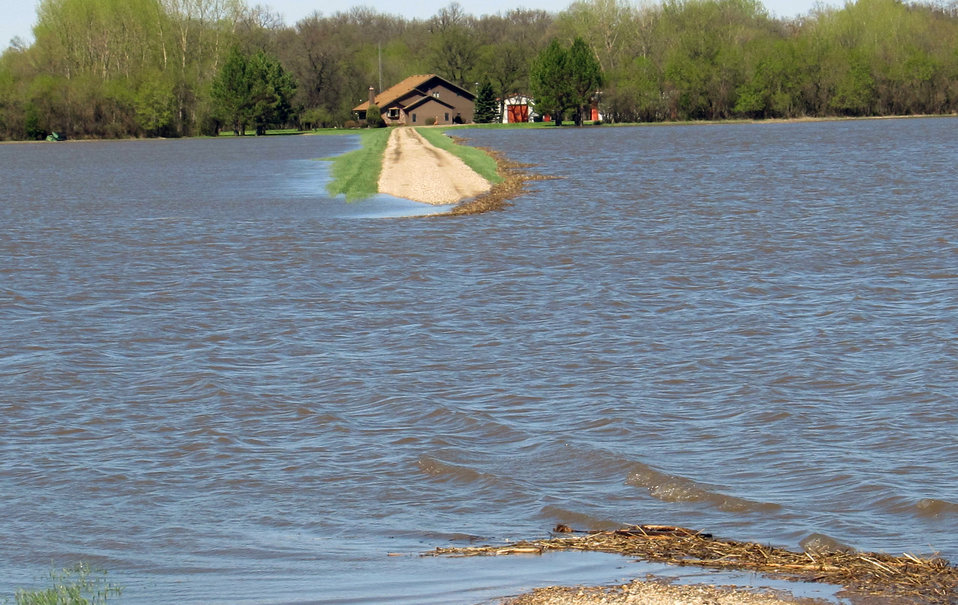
Flooding and water damage in the Park and Tongue River Watersheds located in Cavalier, Pembina and Cavalaier Counties in ND on Thursday, May 23, 2013.